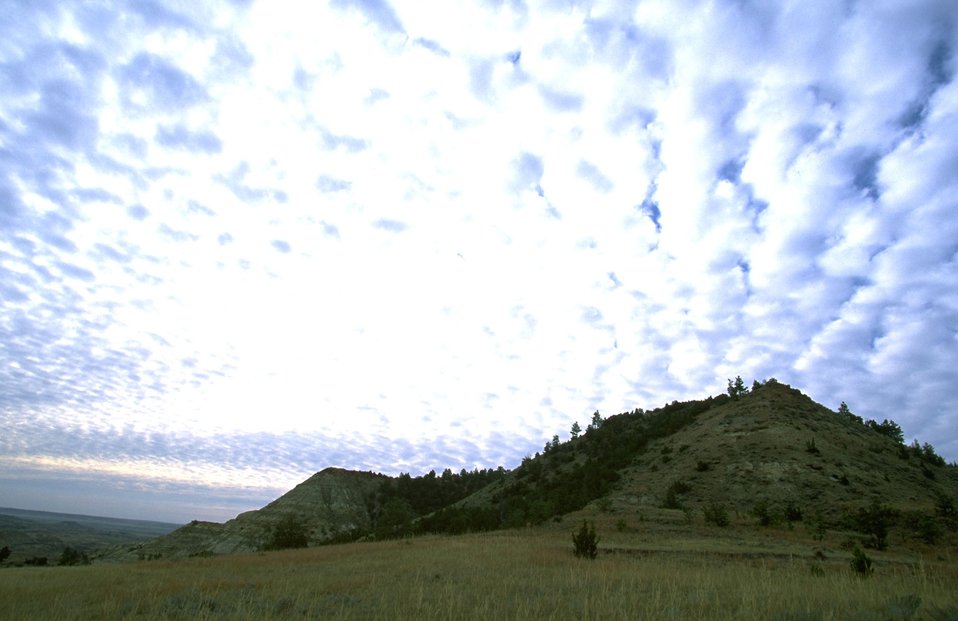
Unusual cloud formations above the hills in the Terry Badlands